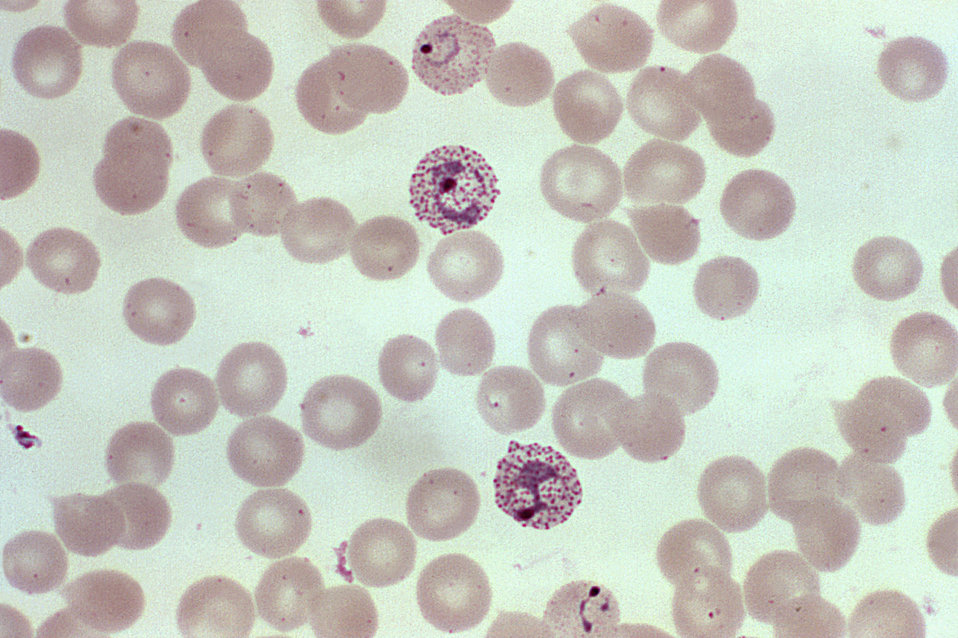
This photomicrograph of a blood smear contains both immature and mature trophozoites of the Plasmodium vivax parasite.